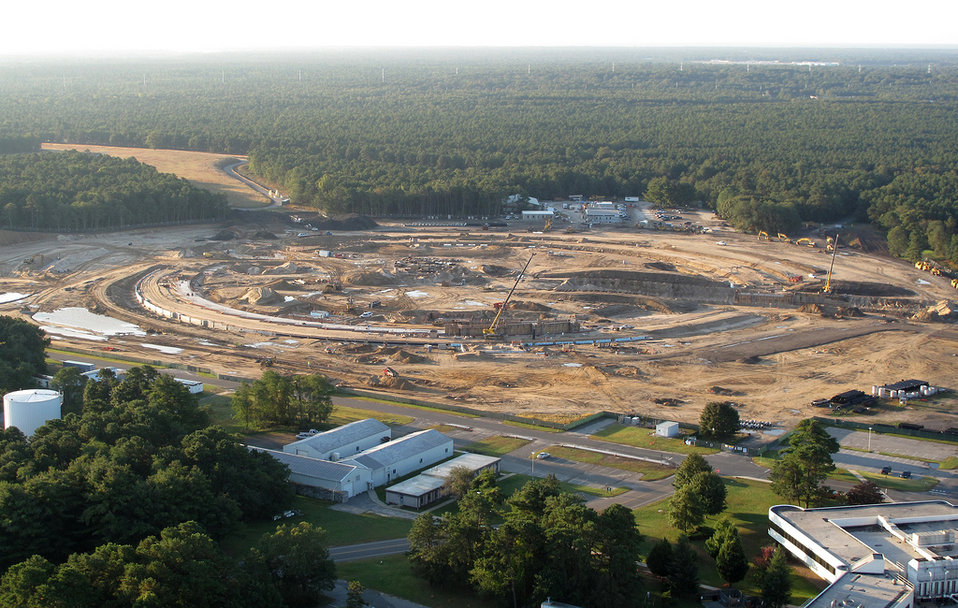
Construction activity proceeds for Brookhaven National Laboratory 's National Synchrotron Light Source II.
When completed, the NSLS-II will be the world's leading storage-ring-based synchrotron light source. It will be first light source that that combines nanometer spatial resolution with high brightness, coherence, beam stability, enabling nanometer-scale characterization of materials, with powerful applications to nanotechnology and biotechnology.